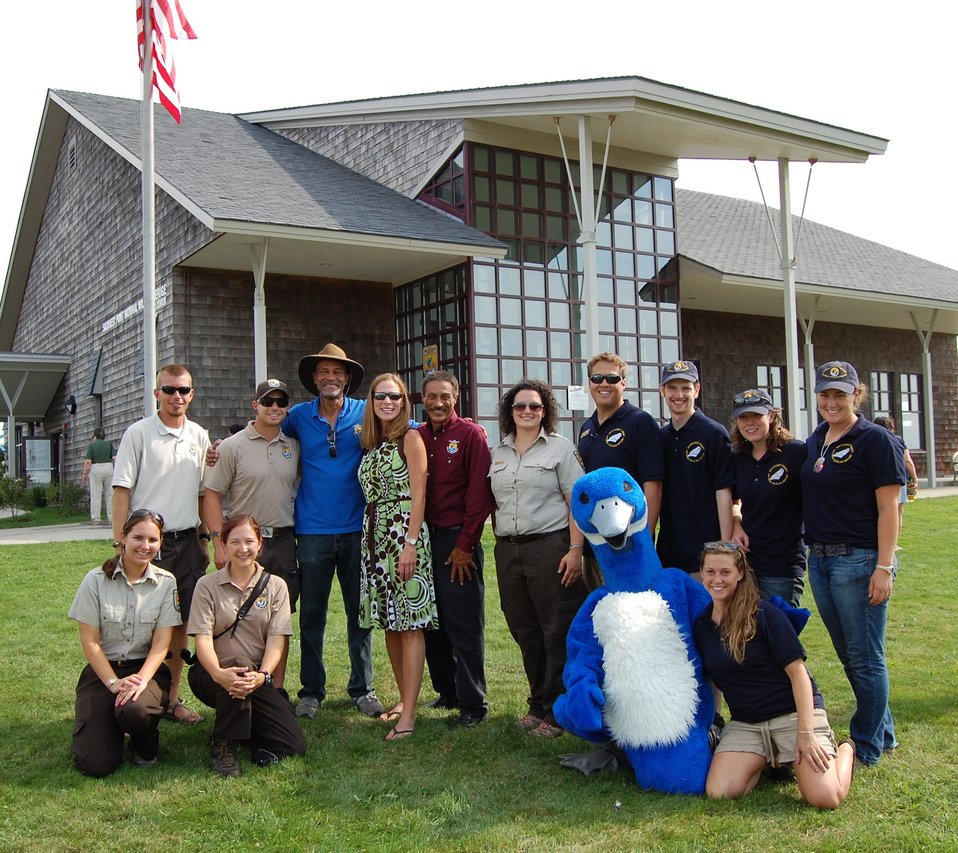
Grand Re-opening

U.S. Fish and Wildlife Service Northeast Regional Director Wendi Weber with refuge staff, interns and volunteers at the grand re-opening of Sachuest Point National Wildlife Refuge on August 24, 2012.